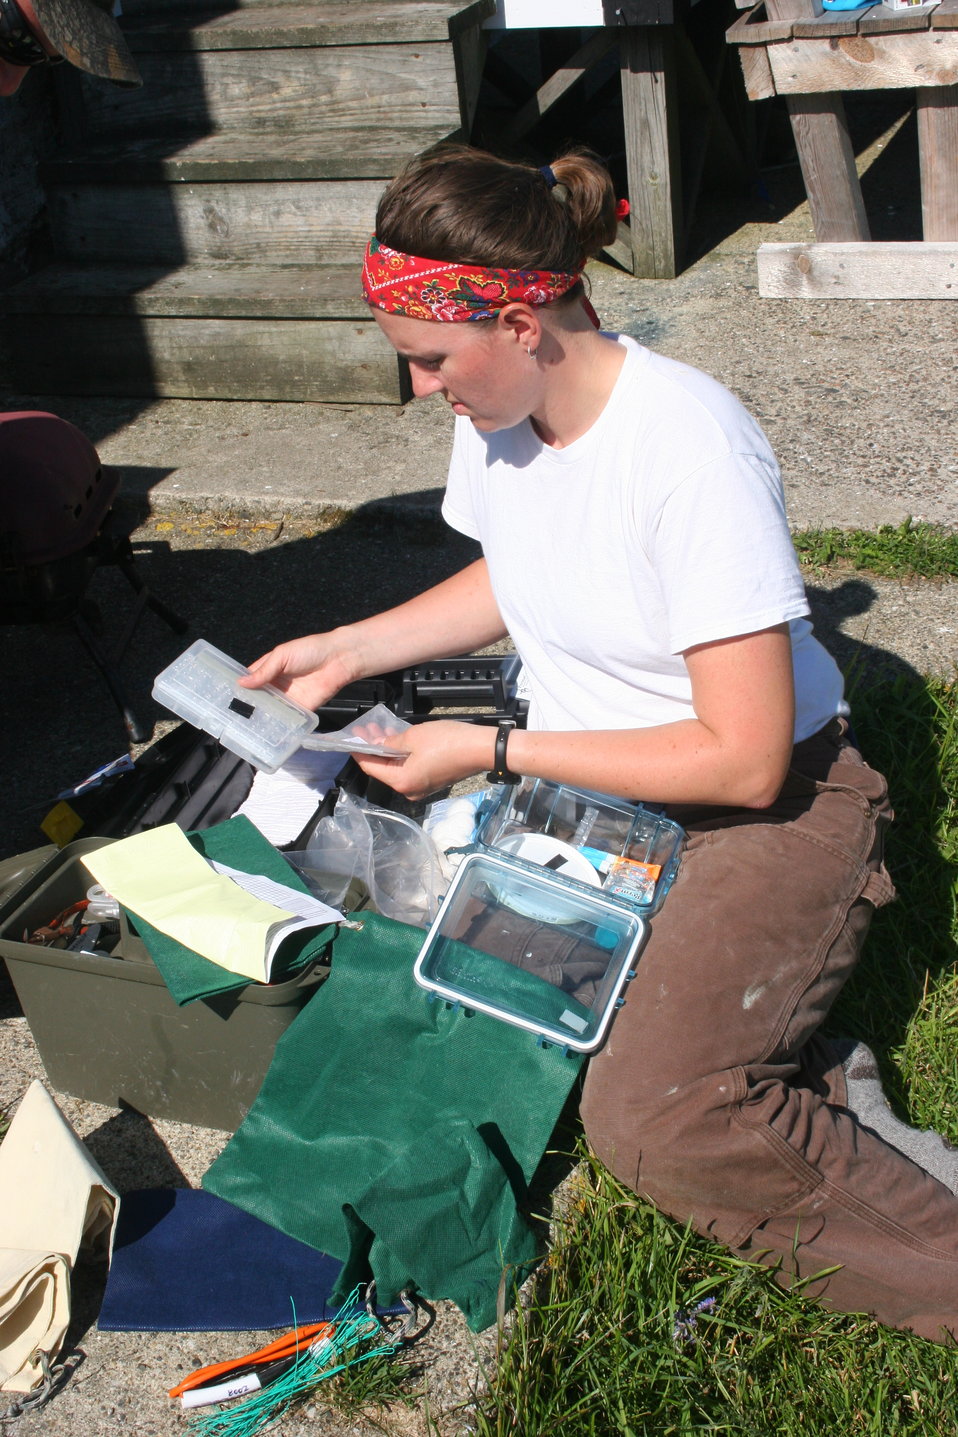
Going Through Supplies